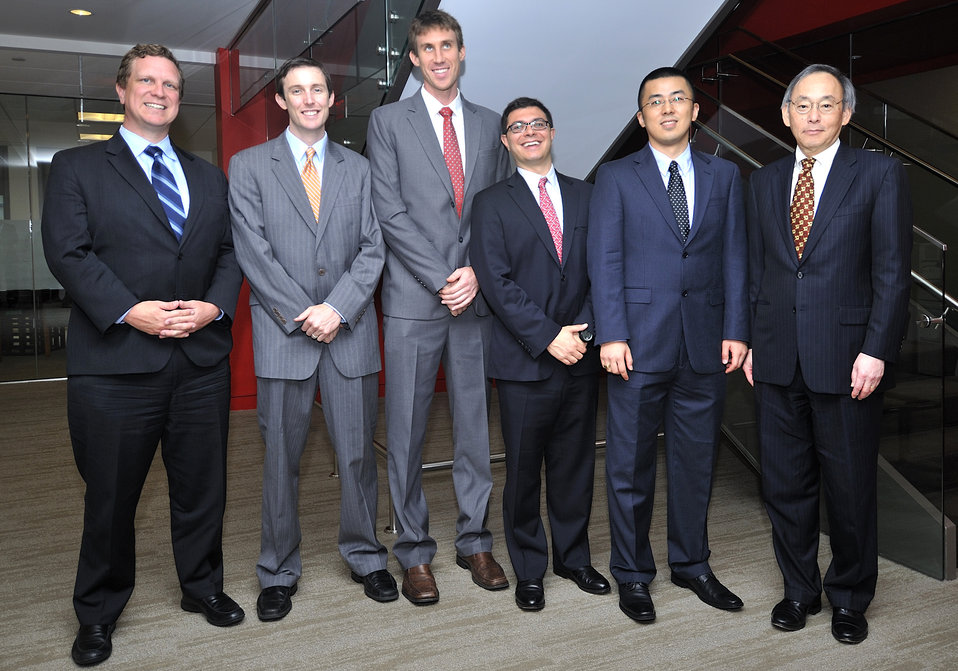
National Clean Energy Business Plan Competition

The National Clean Energy Business Plan Competition inspired nearly 300 university teams across the country to create new businesses to commercialize promising energy technologies developed at U.S. universities and the National Laboratories.